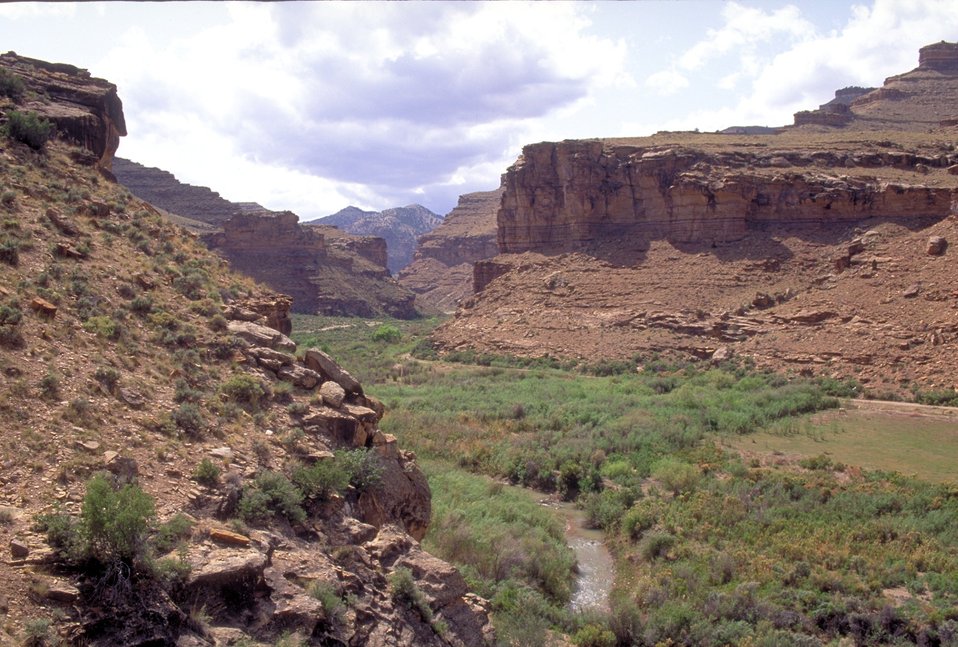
Nine-Mile Canyon near Price, Utah.